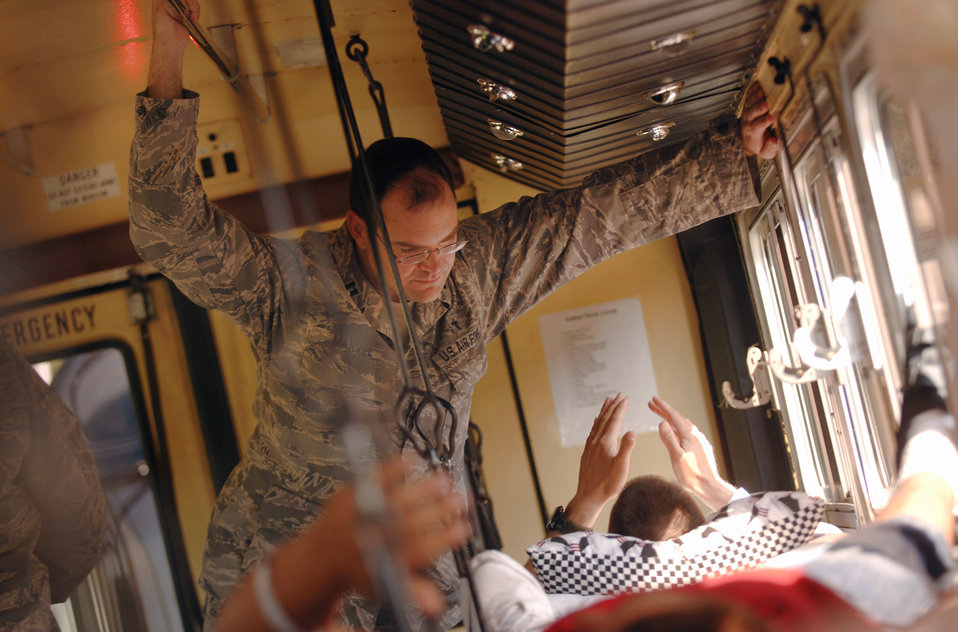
I'm listening

Chaplain (Capt.) Jake Marvel listens to an injured soldier who is awaiting aeromedical evacuation to a medical facility in the United States from Ramstein Air Base, Germany. Chaplain Marvel is with the New York Air National Guard's 109th Airlift Wing in Scotia, N.Y.